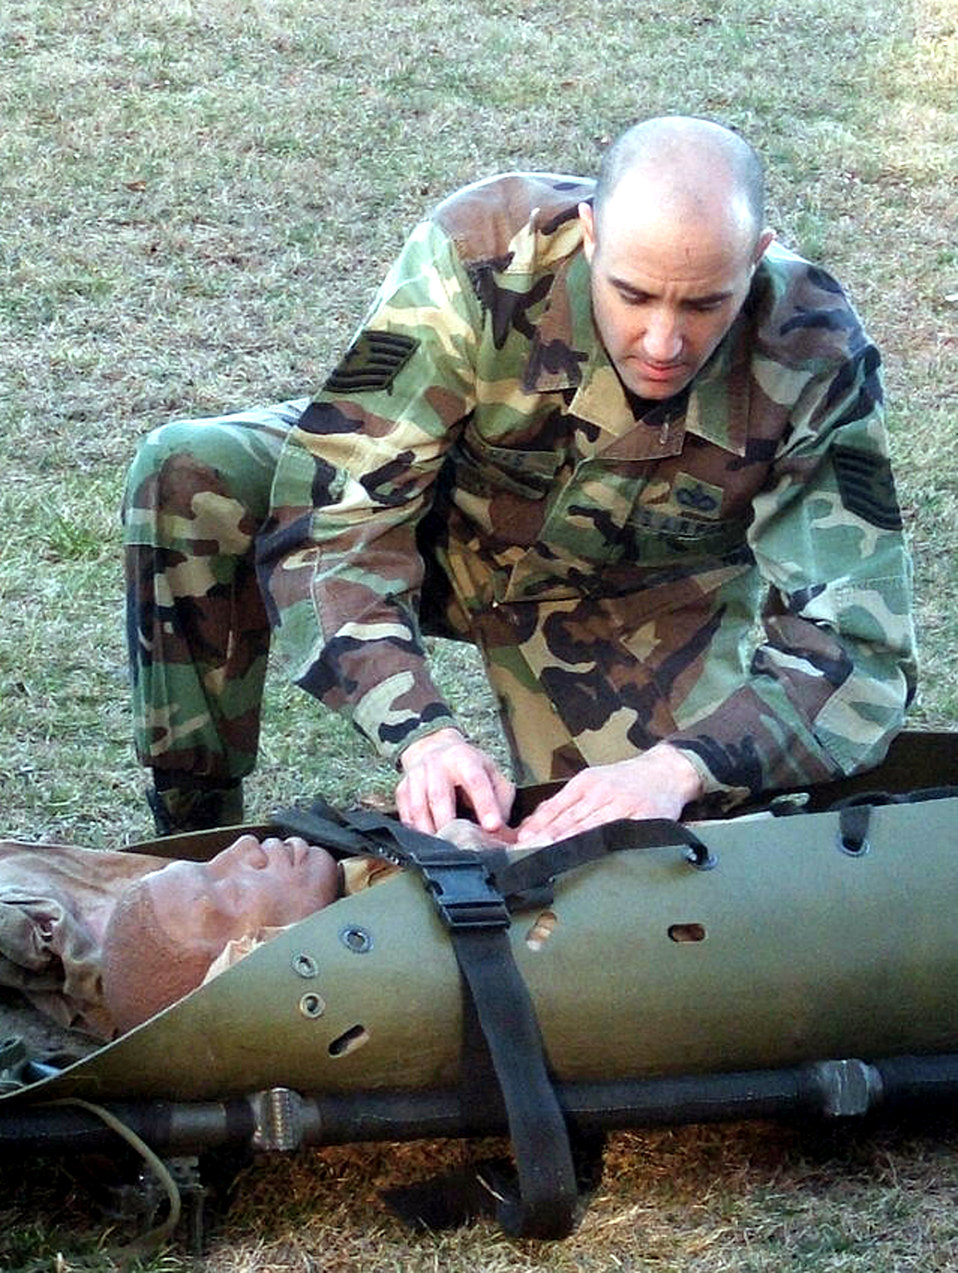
Phoenix Raven

Tech. Sgt. Aaron Thomas assists a